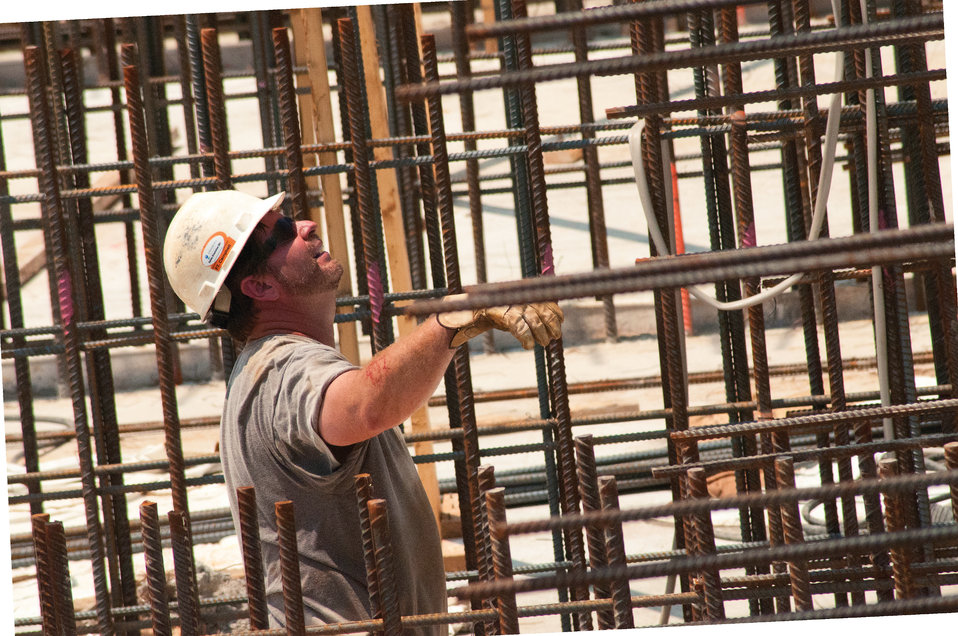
Monday, July 11, 2011-The Harrodsburg Water Treatment Plant is the potable water supply for nearly 10,000 customers in Harrodsburg in Mercer County, including three wholesale customers – North Mercer Water District, City of Burgin and Lake Village Water Association. Mercer County is located in Central Kentucky and has seen steady population growth over the last 60 years – a trend that was confirmed with the release of the 2010 Census data. Given its proximity to Lexington, that growth is projected to continue through 2025 and beyond.

The city needed U.S. Department of Agriculture Rural Development’s assistance because its existing plant is aging, much of the equipment is outdated and the demand for potable water from the treatment plant has been increasing for years. The existing water treatment plant needs to expand and improve its process due to the increased demand for water and EPA regulations pertaining to disinfection byproducts. The city meets the regulations that are currently in place, but it may not be able to meet future, more stringent regulations without improvements to the treatment process.

The plant expansion will increase the current maximum processing capacity of 4 million gallons, to 6 million gallons of water per day. On this day, crews are assembling iron reinforcement bars for the new flocculation/sedimentation structure. That facility will allow the water to be held longer for additional natural separation of sediment, reducing the need for chemicals to accelerate separation of fine particles; producing clean water. In the back of the plant, a 600,000 gallon well is being constructed to support peak demand periods and stabilize production flow.

Rural Development provided a $7.7 million loan and $3.3 million grant, totaling $11 million toward this project. Other funding sources for the project include a $1 million grant from the HUD Community Development Block Grant program to round out the $12 million project.